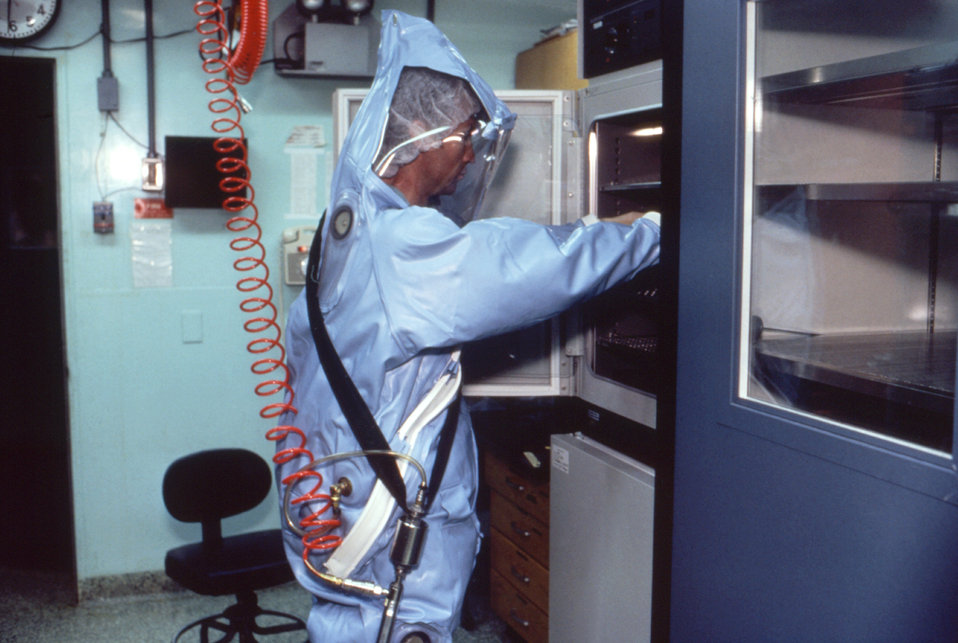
This 1980s photograph shows a CDC laboratorian while working in a maximum containment, or "Hot Lab".